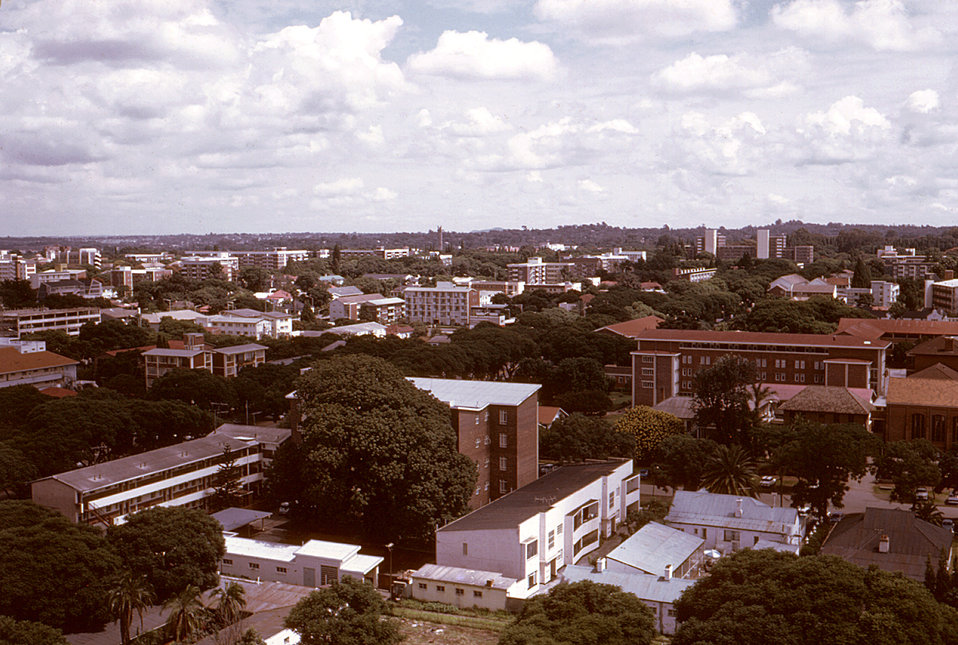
This photo was taken during a visit to Bulawayo, Rhodesia, now Zimbabwe, by two individuals later treated for Marburg disease.